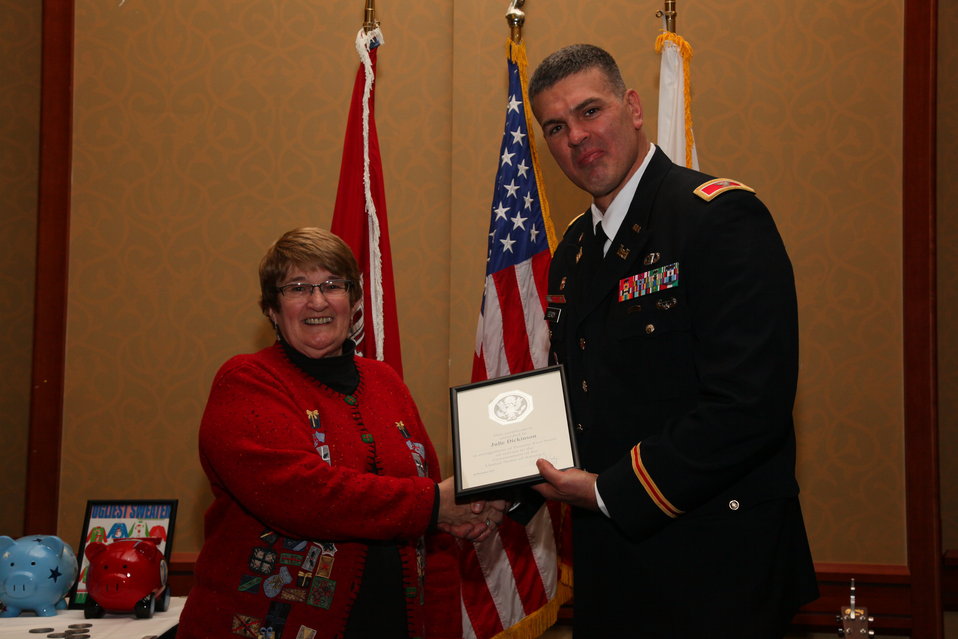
Sacramento District Holiday Party 2011